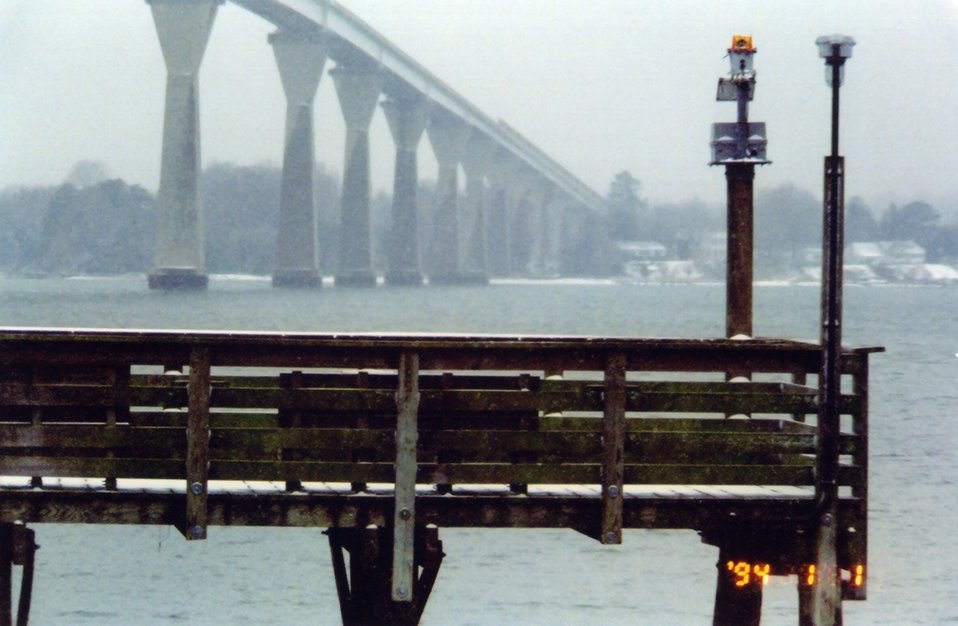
Pepper Langley Fishing Pier at Solomons Island.